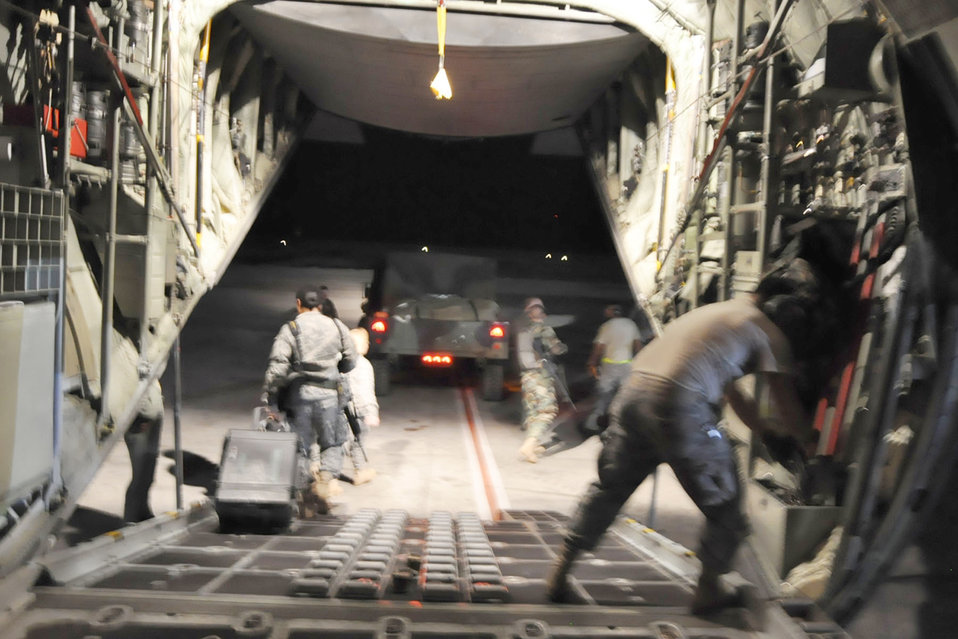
Medical mission to Haiti

The last member of a group of 19 U.S. military medical people leaves the C-130H Hercules at Toussaint L'Ouverture International Airport in Port-au-Prince, Haiti, Jan. 18, 2010. The medical group, consisting of U.S. Army and Air Force servicemembers from Soto Cano Air Base, Honduras, was flown here by the Air Force Reserve Command's 910th Airlift Wing.